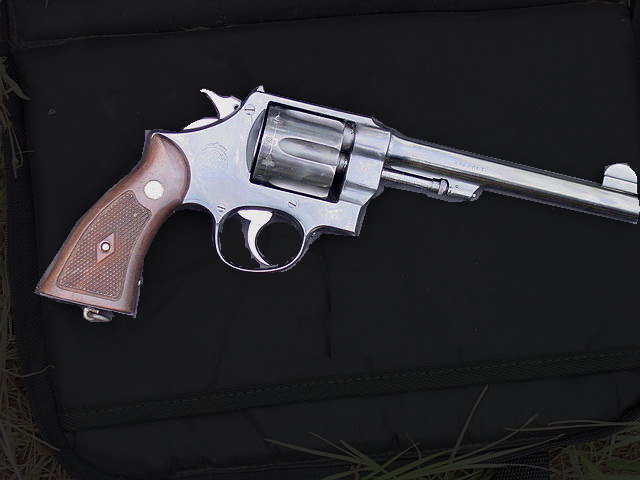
Smith and Wesson New Century Gold Seal 'Triple Lock'